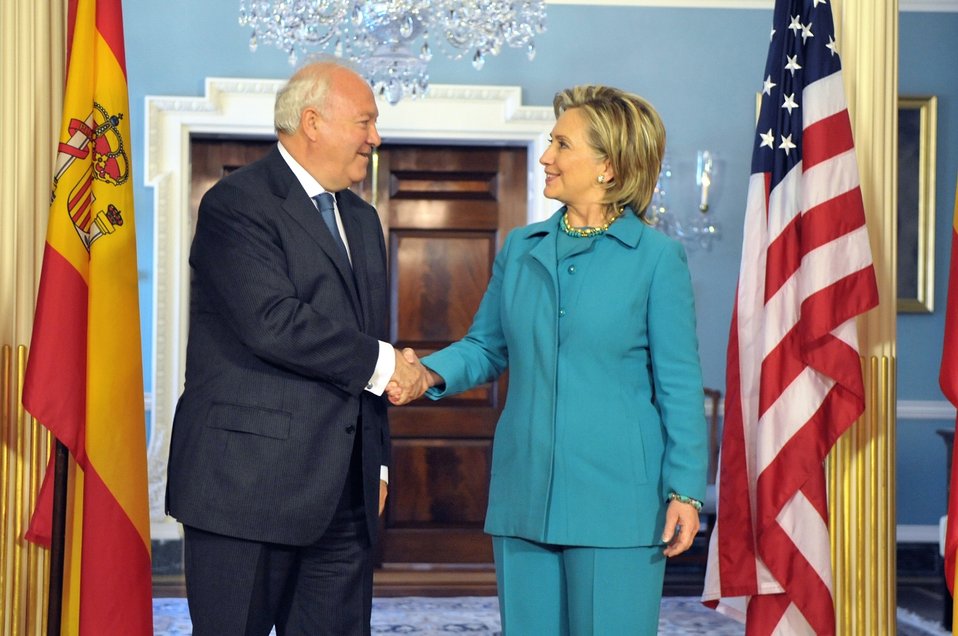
Secretary Clinton With Spanish Foreign Minister Moratinos

U.S. Secretary of State Hillary Rodham Clinton hosts a bilateral meeting with His Excellency Miguel Angel Moratinos, Minister of Foreign Affairs of Spain, at the U.S. Department of State, Washington, DC, April 30, 2010.